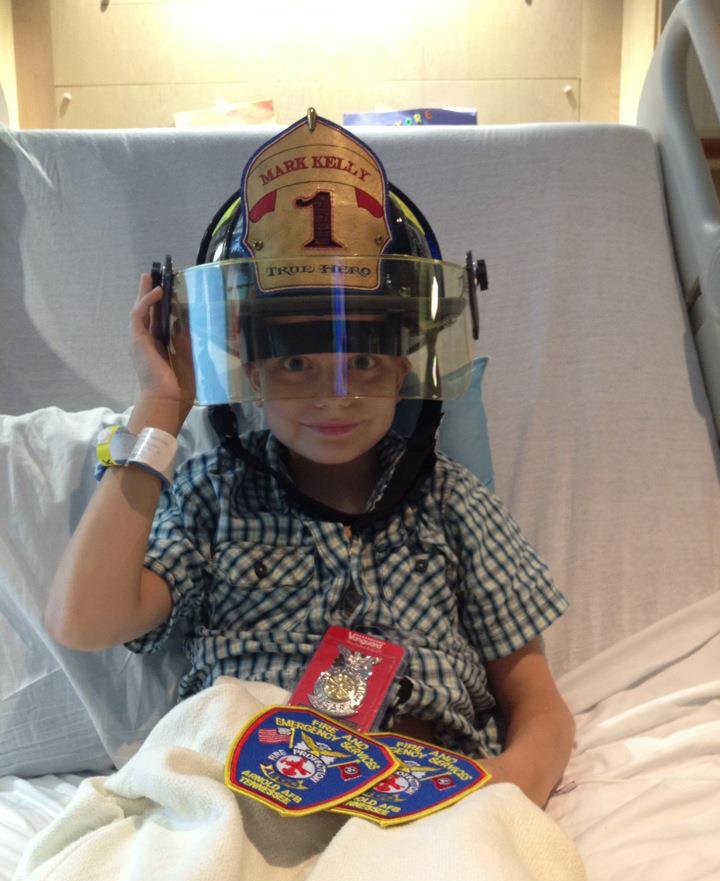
True Hero receives honors

Mark Kelly Olson, the 10-year-old son of Aerospace Testing Alliance operations controller Mark Olson, dons a customized fire helmet he received from the Arnold Air Force Base Fire Department, showing his honorary title as a “true hero,” at Vanderbilt Hospital in Nashville, Tenn. Arnold Engineering Development Complex Fire Department Chief Daryle Lopes and Fire Chief Kip Luttrell spearheaded the effort to rally moral support for Mark since learning that he had been diagnosed with very high risk acute lymphocytic leukemia earlier in the year.